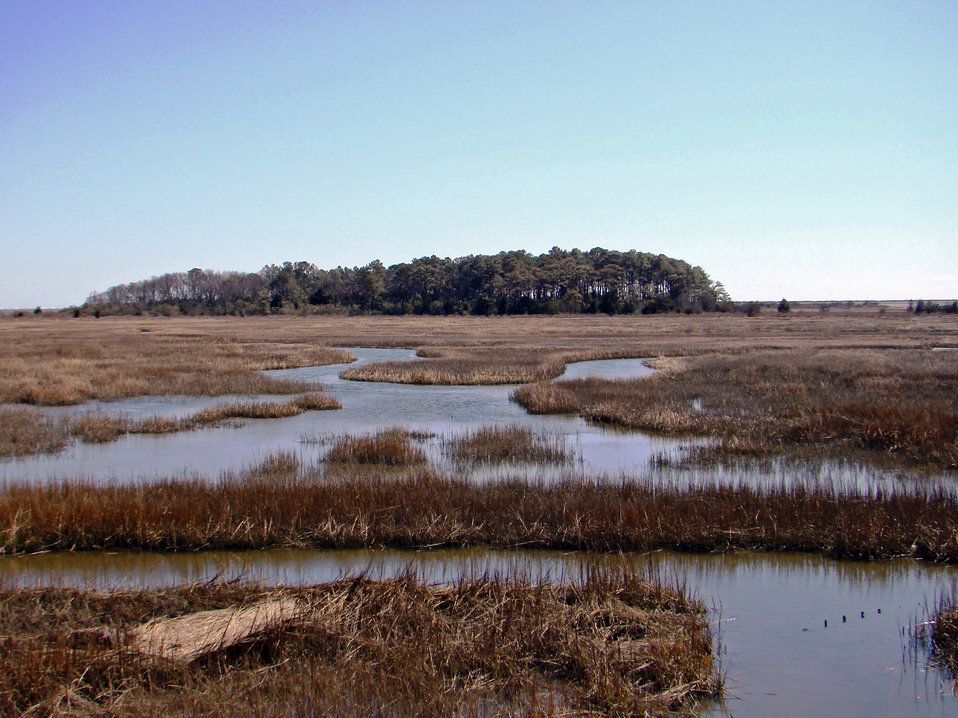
Wetlands

Eastern Shore of Virginia National Wildlife Refuge, VA.